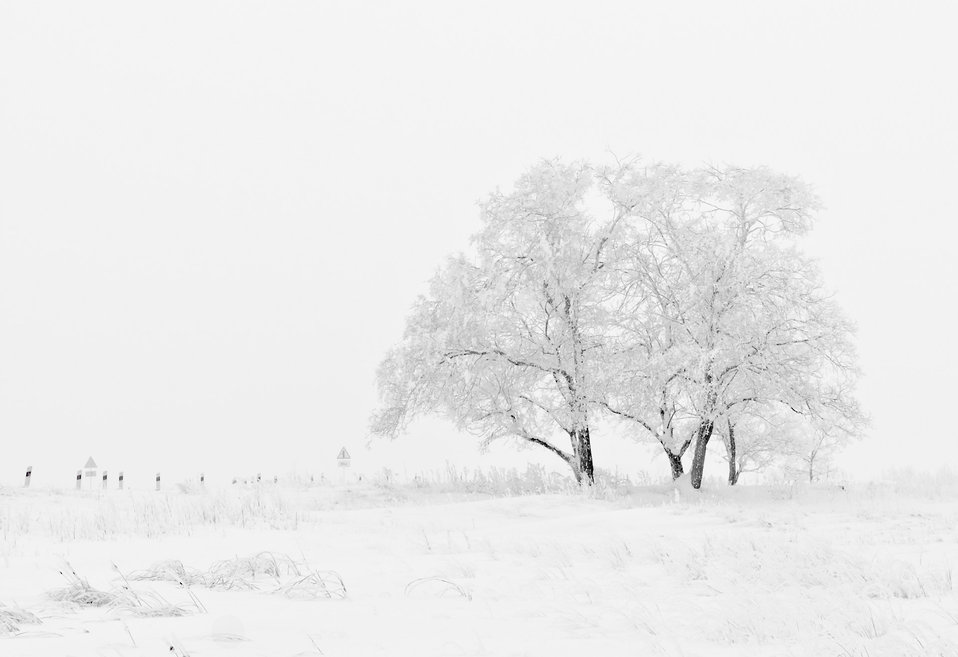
Tree in fog

Winter fog, winter landscape..